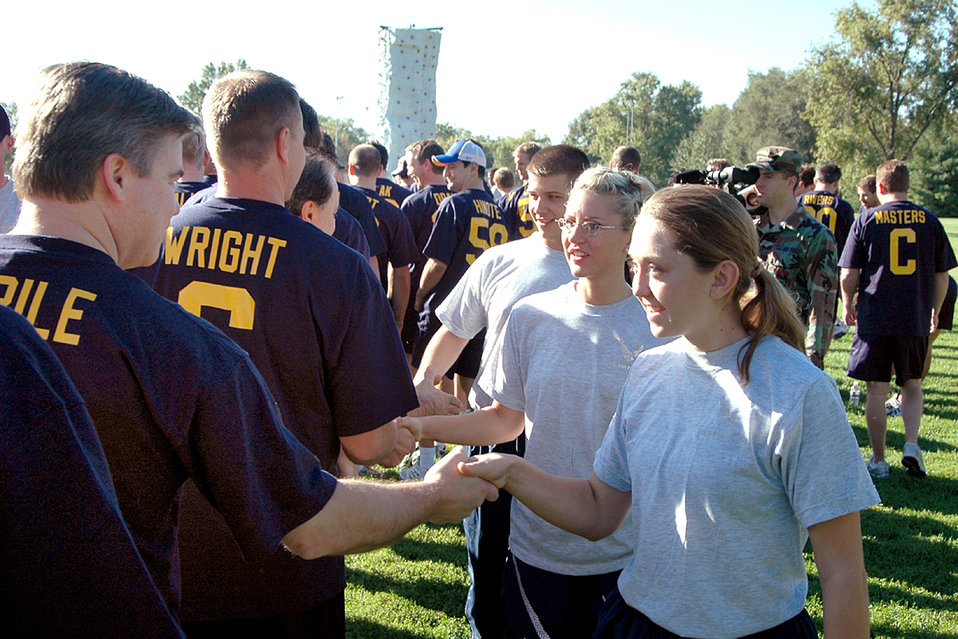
Scott Airmen come down with the Blues

Members of the St. Louis Blues greet Airmen before team building and leadership field exercises at Scott Air Force Base, Ill., Sept. 26.